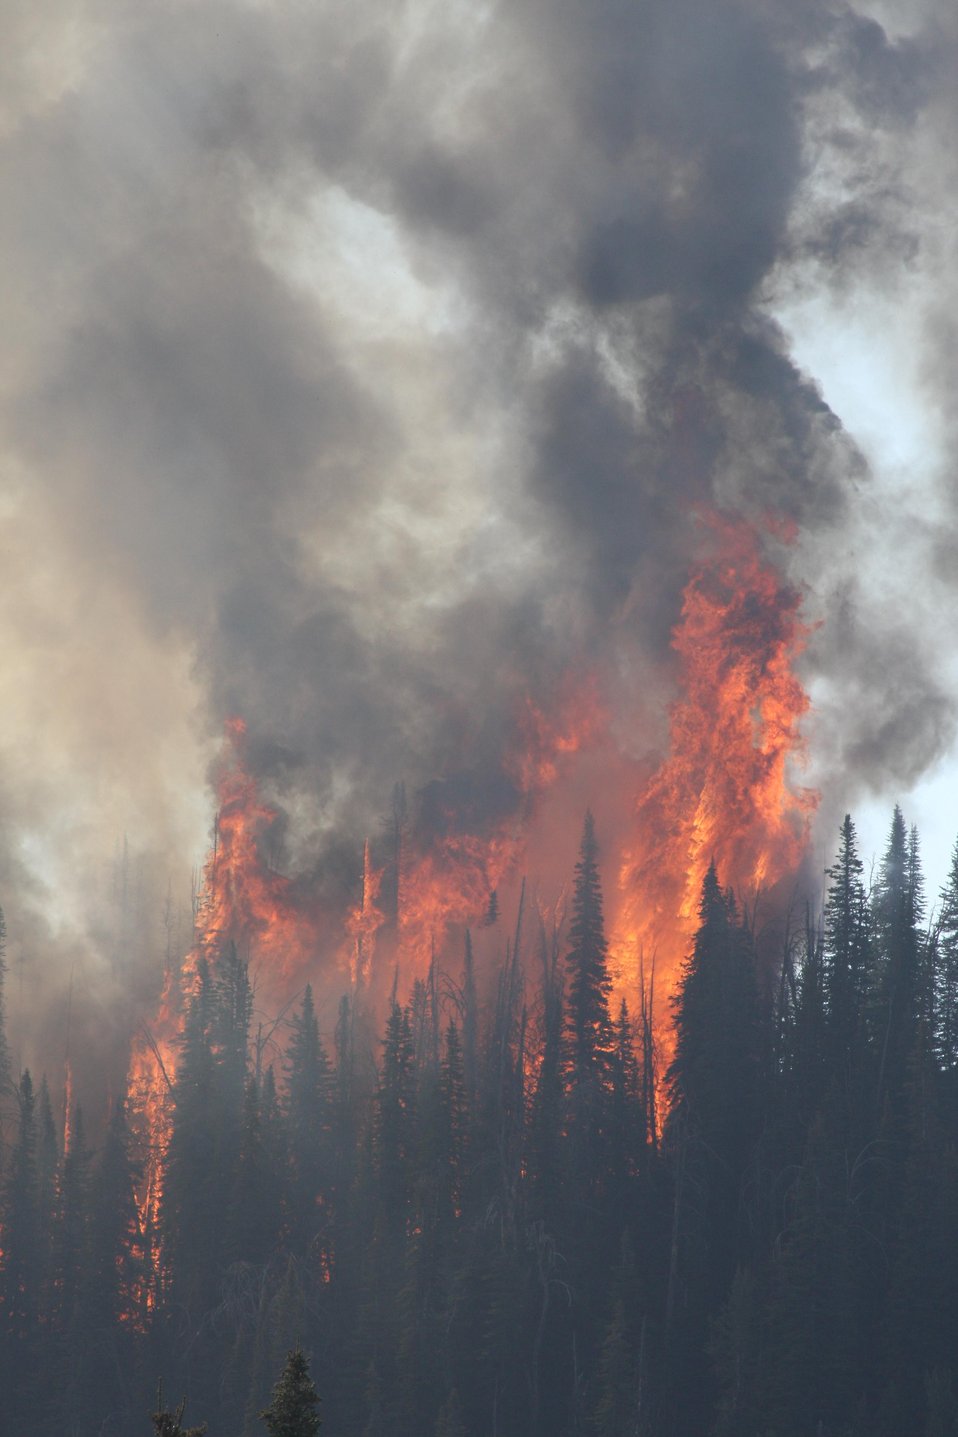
A helicopter drops retardant near Jolly Sailor Gulch off Deer Creek at the Beaver Creek Fire. The retardant proved effective on lighter fuels like sagebrush and grass. The Beaver Creek Fire in the Sawtooth National Forest near Hailey, ID began on Aug. 7 2013 by lighting has consumed approximately 111,387 acres and is 90% contained.